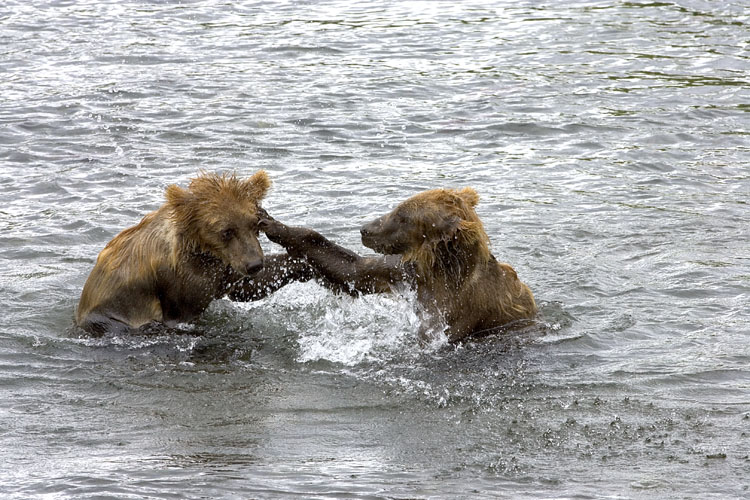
KOD Hildebrand (26)

Kodiak National Wildlife Refuge- Wildlife